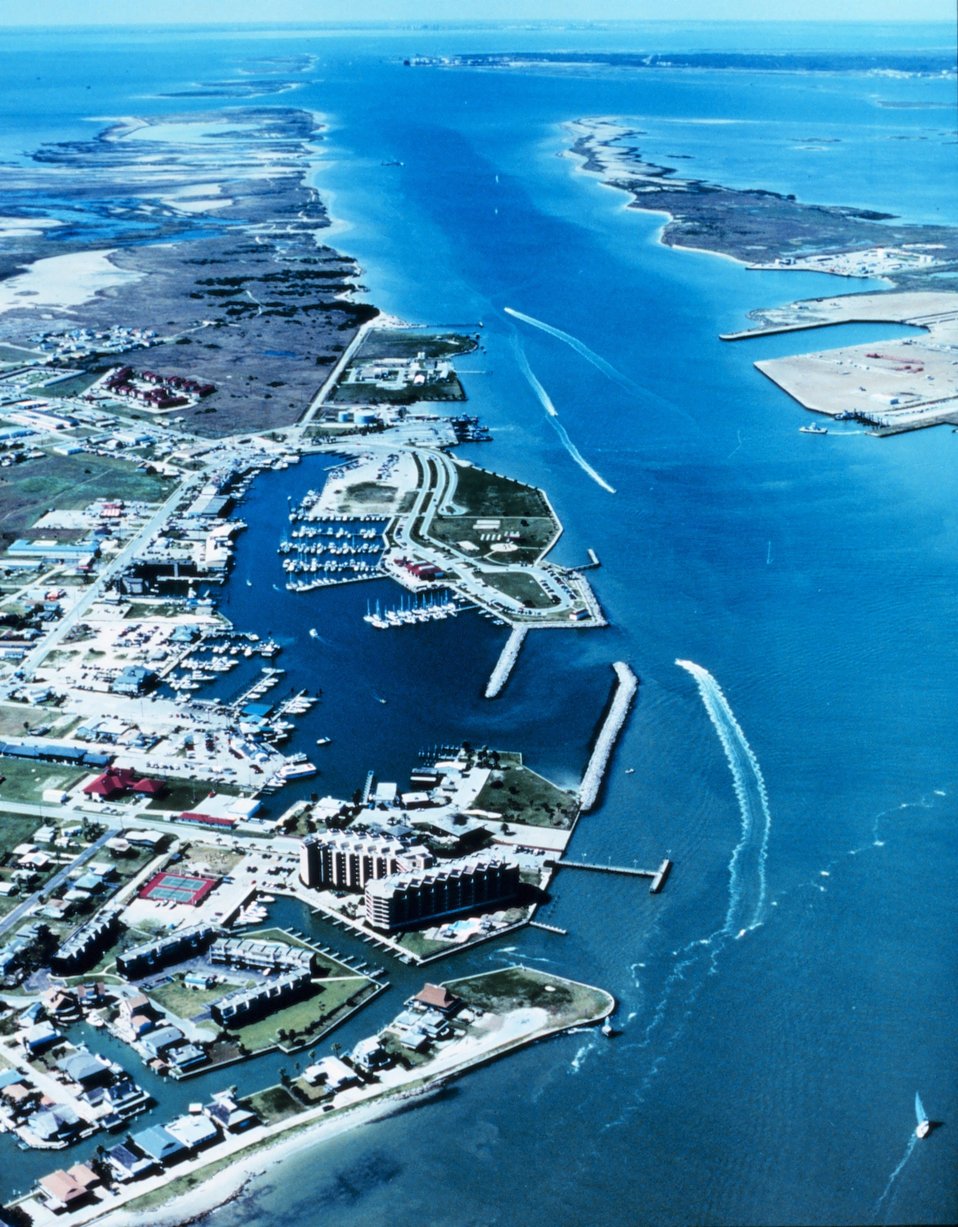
2750 North Latitude 9704 West Longitude.